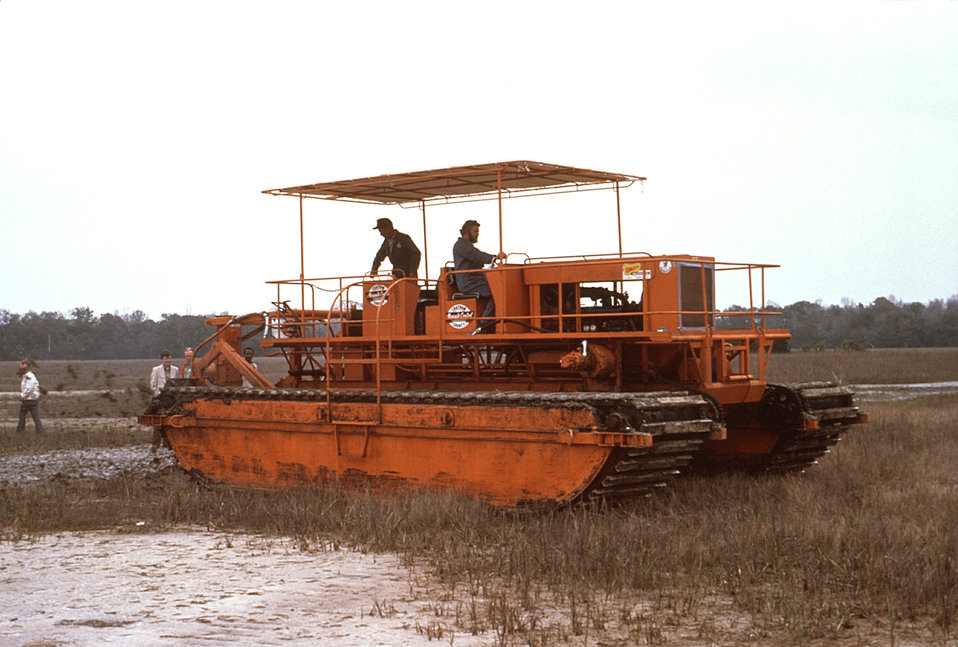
This amphibious rotary ditcher (ARD) was in the process of clearing away debris from a 'spoils site' located adjacent to a previously created drainage ditch.